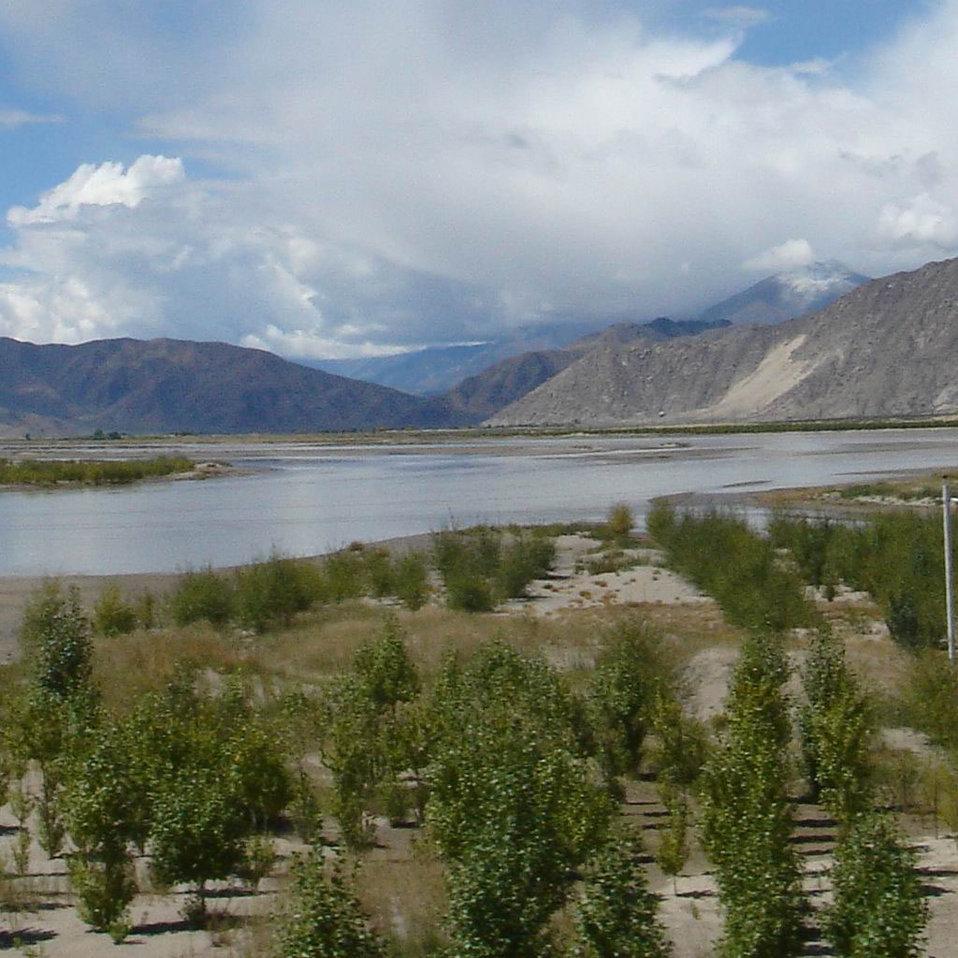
Uploaded by request of Guo Jinlong

Taken near Lasa, the Provincial capital of Tibet

Lasa River is one of the tributaries of Brahmaputra River. The blue sky, clean water, beautiful cloud and green vegetation are the real represents of the environment. One will lose himself in such circumstances to enjoy the environment.